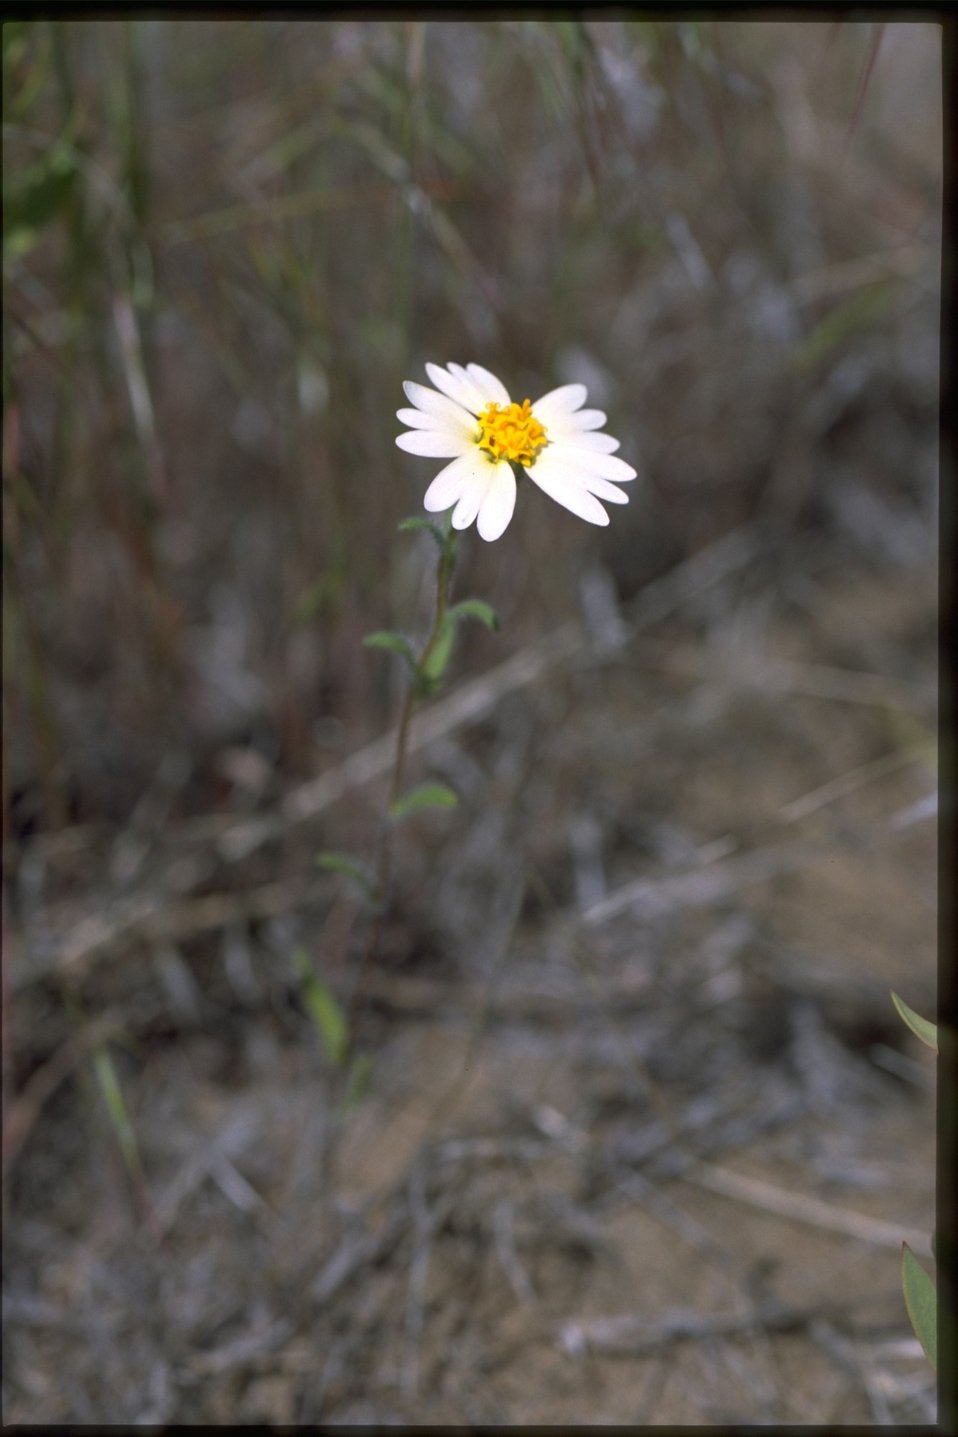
Farshot of Asteraceae.